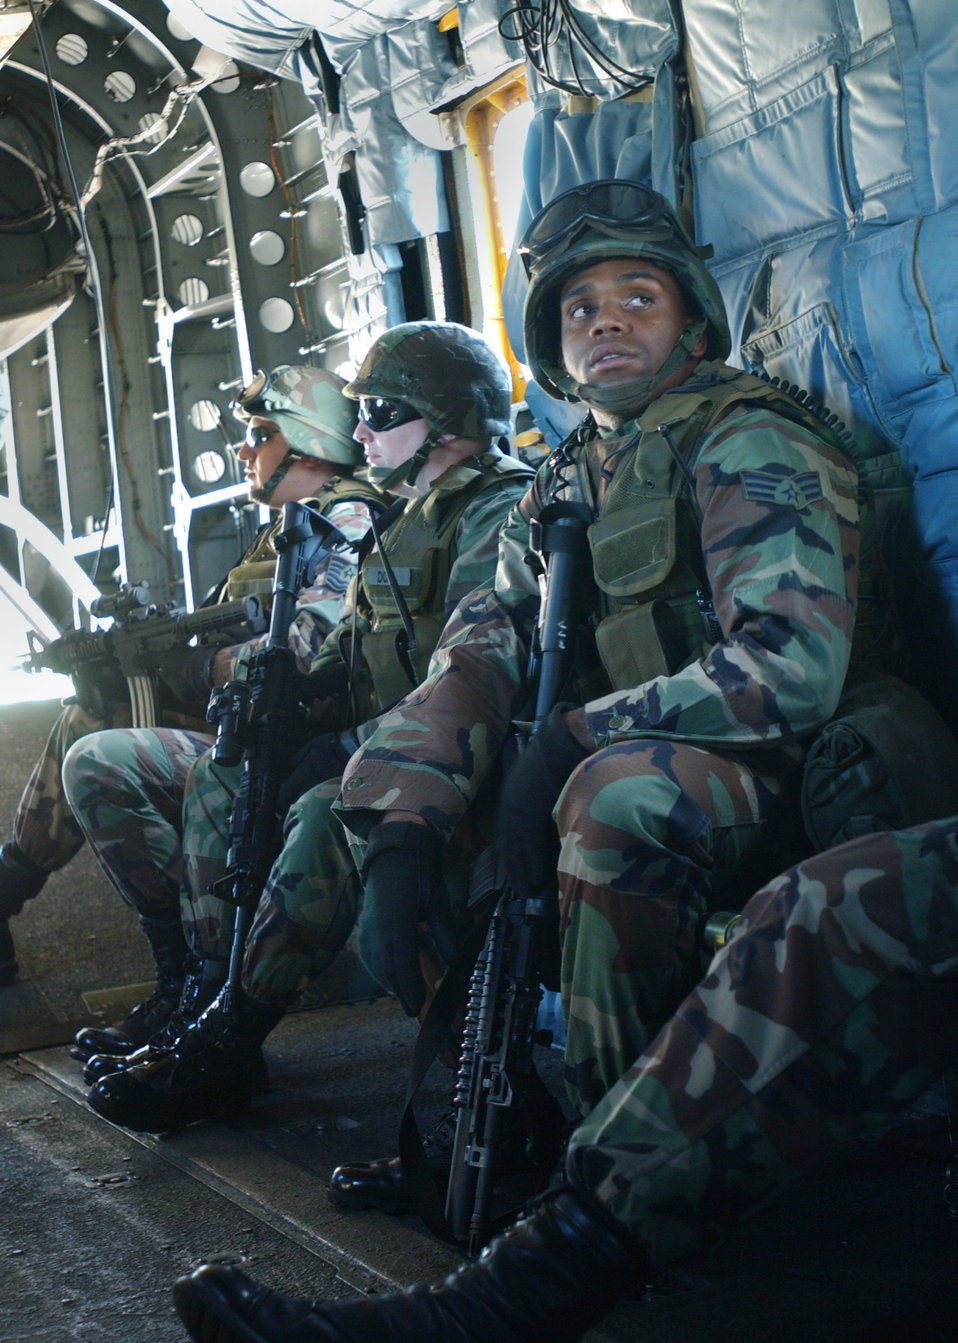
Joint training

AVIANO AIR BASE, Italy -- Senior Airman Tyrone Jackson participates in joint helicopter deployment training with the U.S. Air Force, Navy and the Italian carabineri here recently. Airman Jackson is assigned to the 31st Security Forces Squadron.